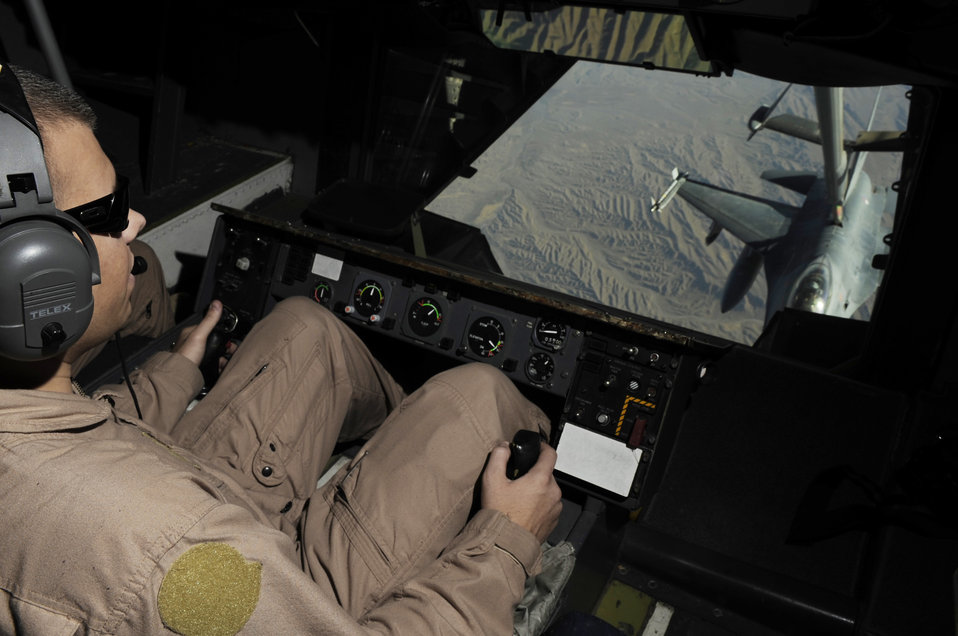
AMC commander visits Airmen in Southwest Asia, highlights mobility's role

Staff Sgt. Justin Brundage refuels a Royal Netherlands air force F-16 from a KC-10 Extender June 18 over Afghanistan. Sergeant Brundage is a KC-10 boom operator from the 908th Expeditionary Air Refueling Squadron.